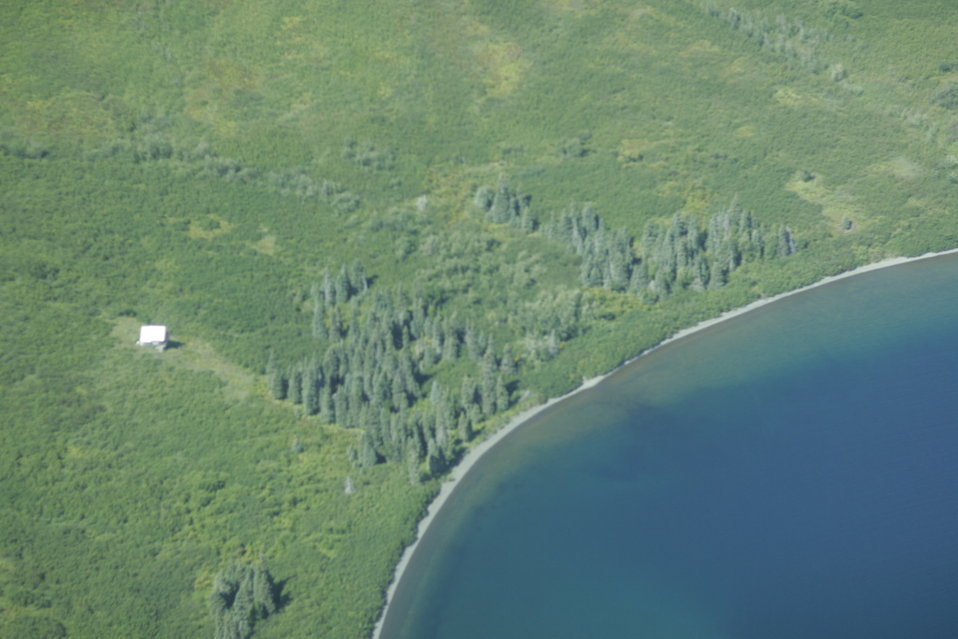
Togiak Nation Wildlife Refuge